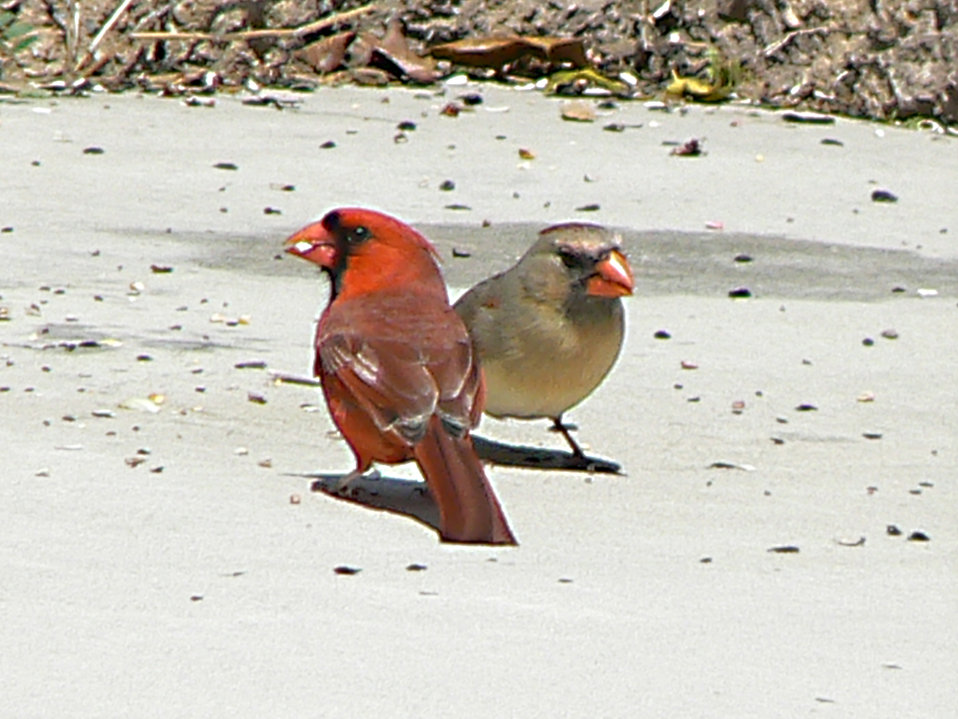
Photo of the Week - Cardinal Pair (NJ)

Photo of the Week - 12/19/2011

A pair of cardinals at Cape May National Wildlife Refuge.